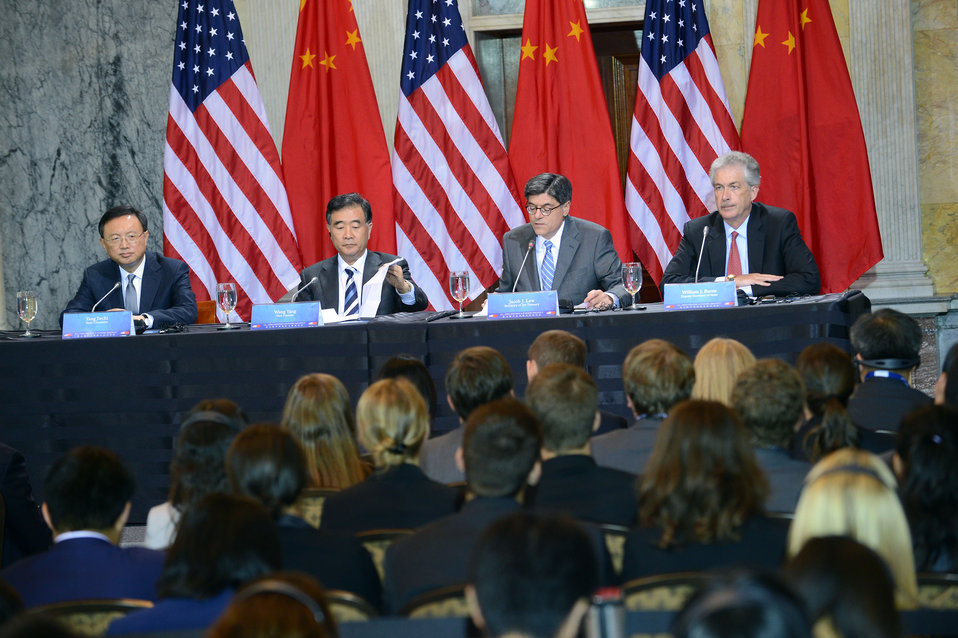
Deputy Secretary Burns, Secretary Lew, Chinese State Councilor Yang, and Chinese Vice Premier Wang Deliver Their Closing Statements

U.S. Deputy Secretary of State William Burns, U.S. Secretary of the Treasury Jacob Lew, Chinese State Councilor Yang, and Chinese Vice Premier Wang deliver their closing statements of the U.S.-China Strategic and Economic Dialogue in the Cash Room at the U.S. Department of Treasury in Washington, D.C., on July 11, 2013.